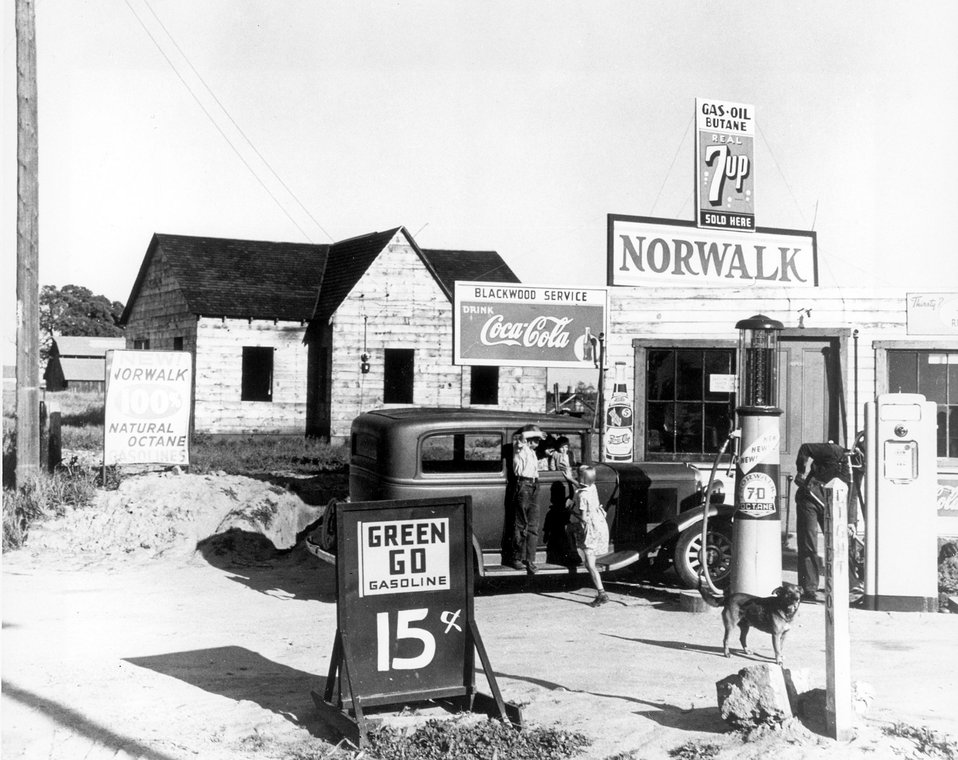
Rural gas station during the depression.